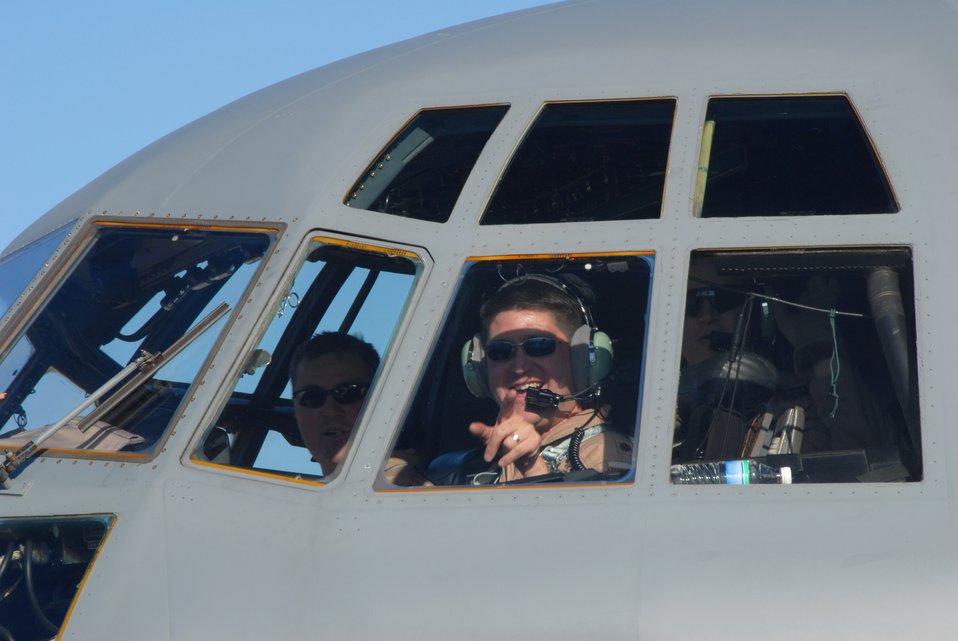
Welcome home coach

Maj. Jeffrey Wong points to a crowd waiting for him and other members of the 133rd Airlift Wing Feb. 17 at the Minneapolis St. Paul International Airport. Major Wong piloted the Minnesota Air National Guard C-130 Hercules that returned from deployment to Afghanistan supporting Operation Enduring Freedom.